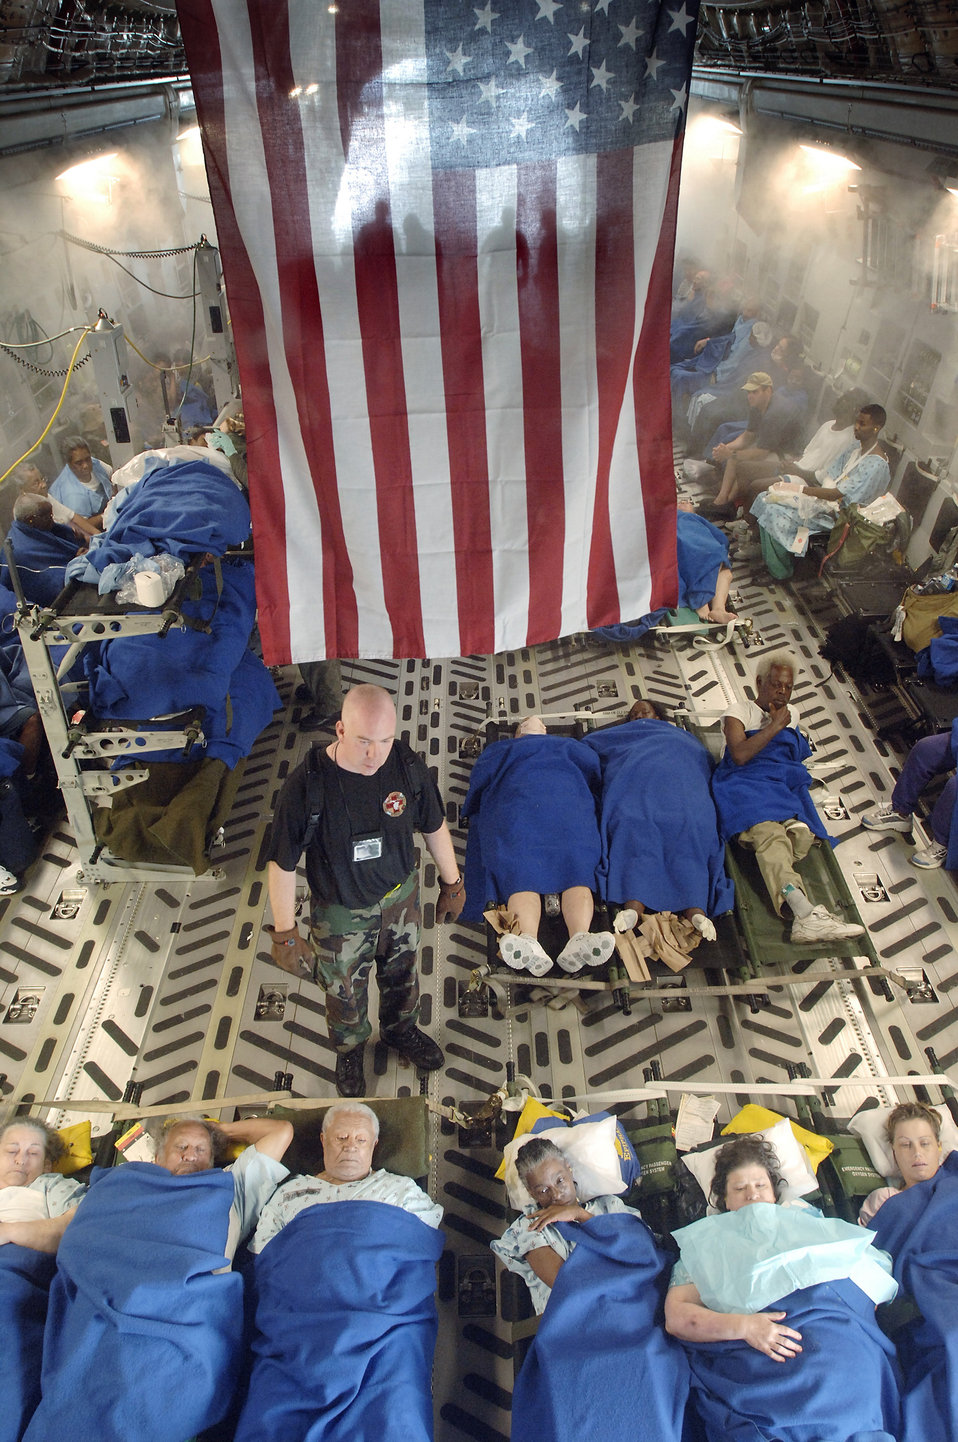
Evacuation

NEW ORLEANS -- Capt. Gary Hardy helps prepare sick and injured people for a flight aboard a C-17 Globemaster III. They are being evacuated to Dobbins Air Force Base, Ga. Captain Hardy is a flight nurse with the 43rd Aeromedical Evacuation Squadron, at Pope AFB, N.C., The aircraft and flight crew are from the 446th Airlift Wing at McChord AFB, Wash.